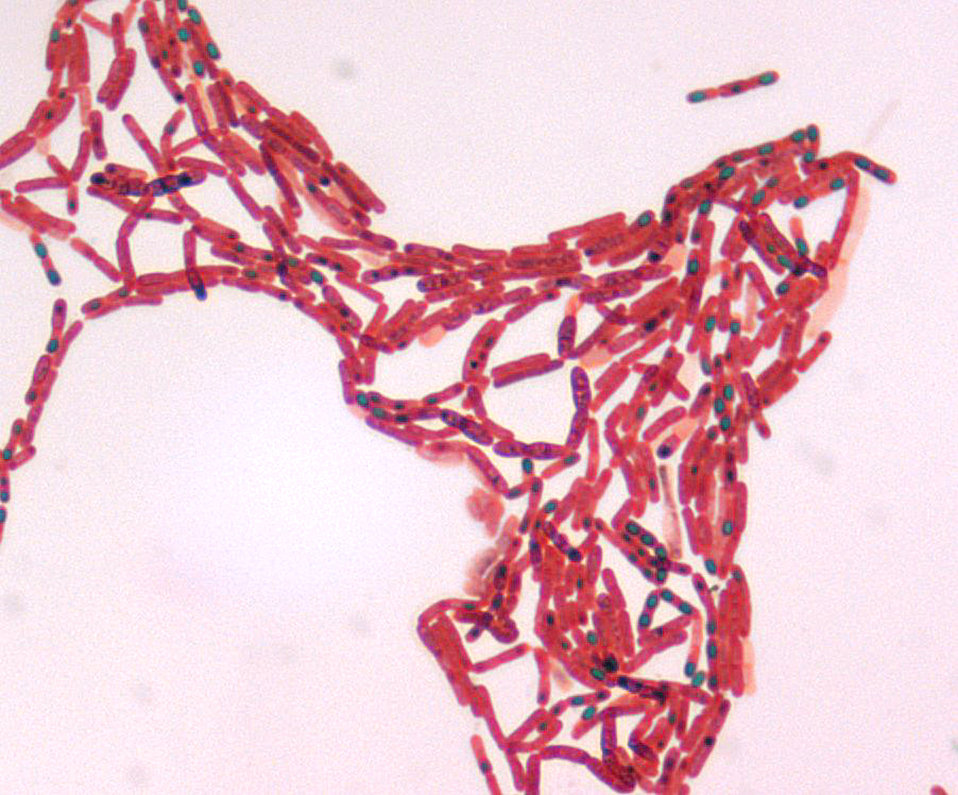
Bacillus species Malachite Green spore stain.